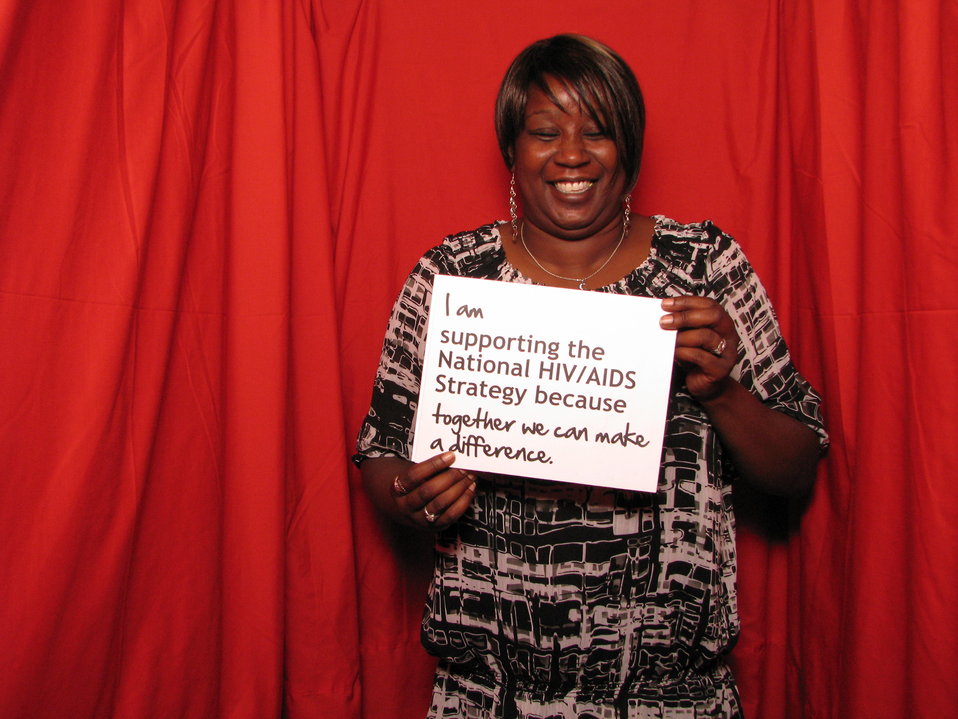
I am Supporting the National HIV/AIDS Strategy because Together We Can Make a Difference

From the AIDS.gov photo booth at the U.S. Conference on AIDS, September 2010 (Orlando, FL).